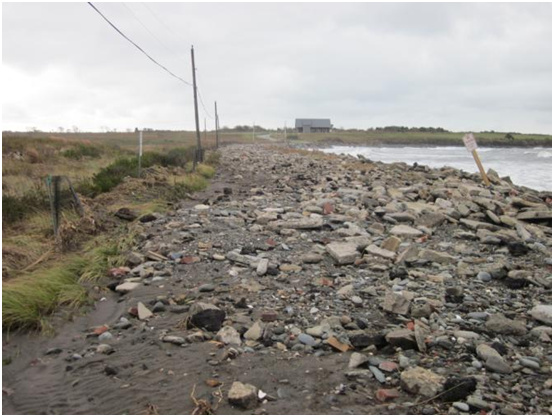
Damage at Sachuest Point (RI)

Sachuest Point Road, the only public road to the refuge is washed out and littered with debris from Hurricane Sandy.